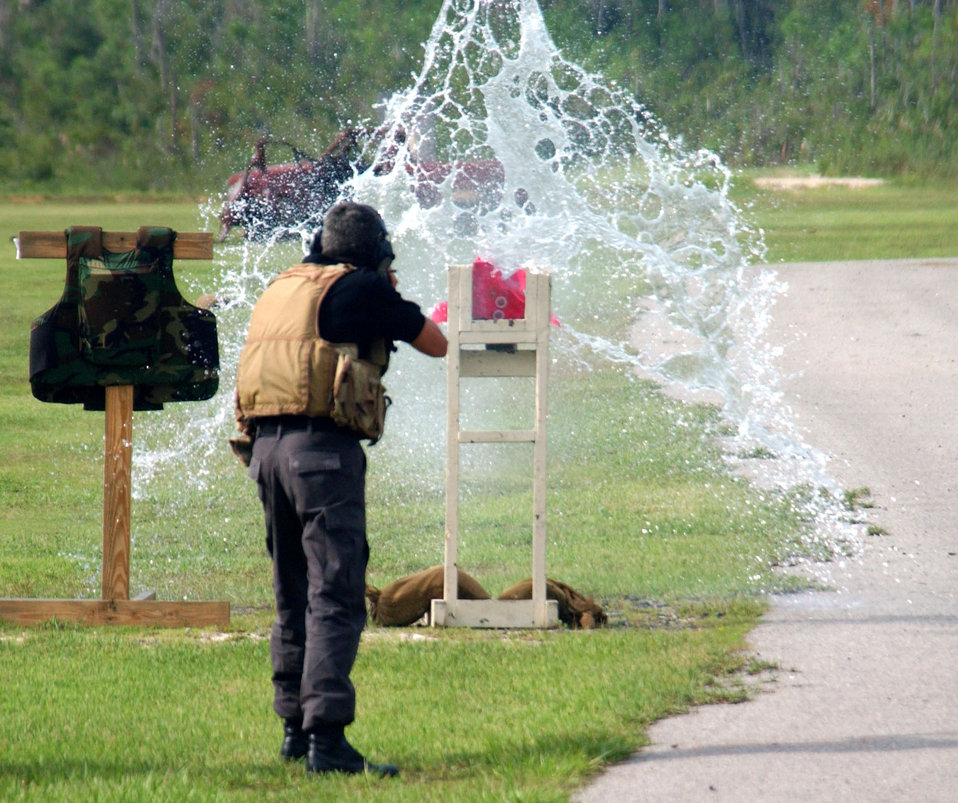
Dynamics of terrorism

Master Sgt. Justin Anderson demonstrates the effectiveness of the AK-47 assault rifle against armored glass for students in the U.S. Air Force Special Operations School's Dynamics of International Terrorism course at Hurlburt Field, Fla., Sept. 13. The course offers students a basic awareness of the motivation, capabilities and threat posed by terrorist groups. Sergeant Anderson is an instructor at the course.